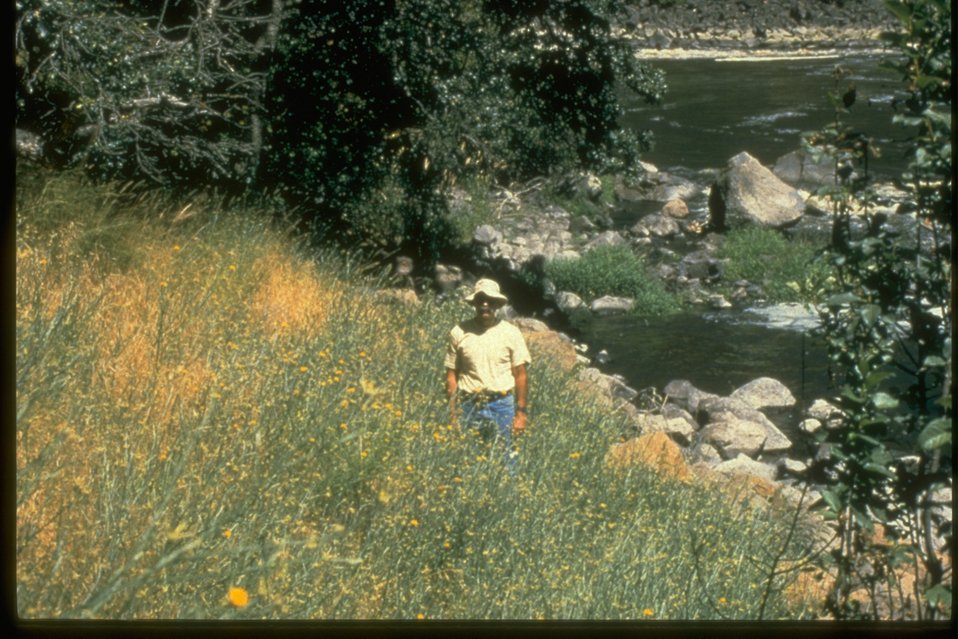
Abandoned recreation trail due to pain inflicted by yellow starthistle.